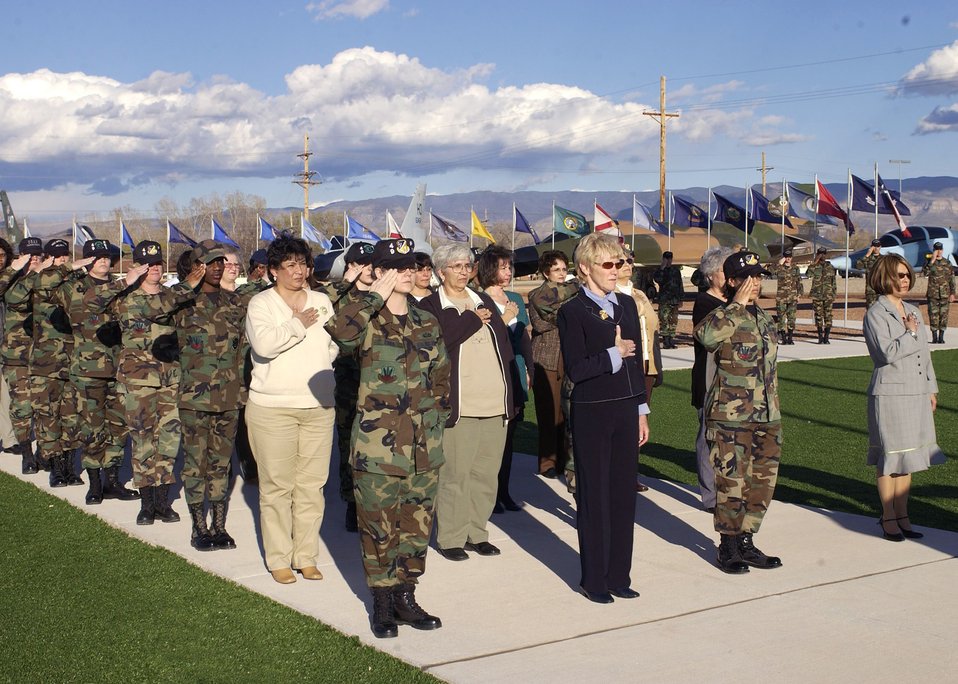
Honoring Women's History Month

HOLLOMAN AIR FORCE BASE, N.M. -- To kick off Women's History Month, employees and Airmen of the 49th Fighter Wing salute the flag during a retreat ceremony here March 1.